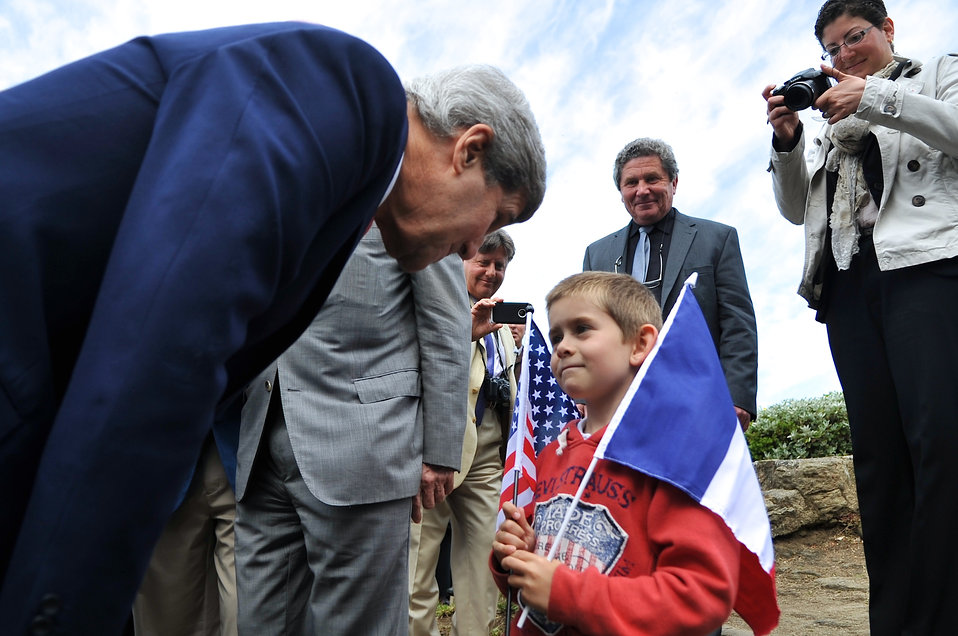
Secretary Kerry Greets a Young Resident of Saint Briac, France

U.S. Secretary of State John Kerry greets a young resident of Saint Briac, France, on June 7, 2014, as the town commemorates the 70th anniversary of D-Day and honors Americans who died liberating the town during World War II.